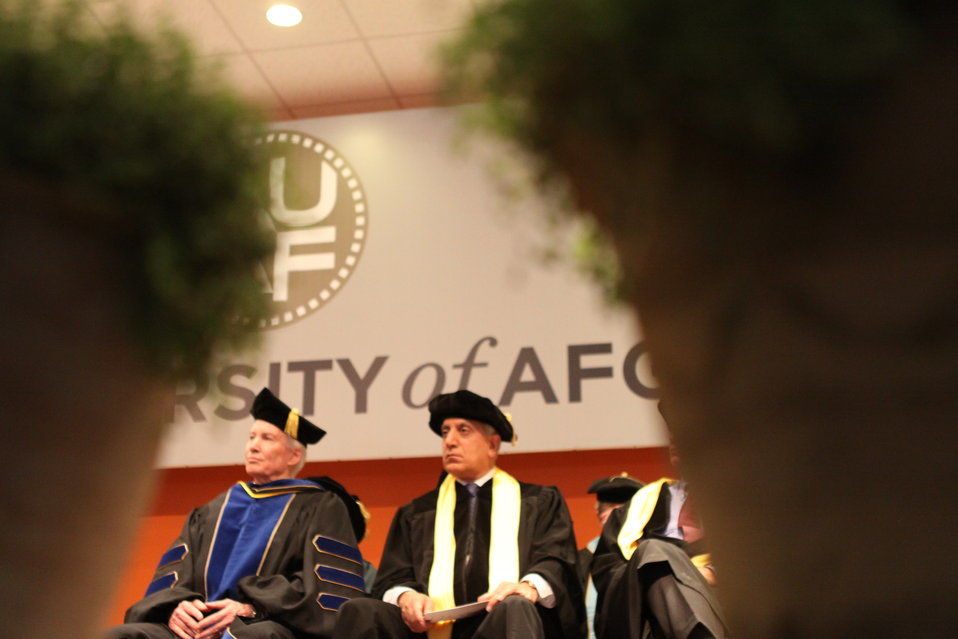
100526 AUAF Graduation 164